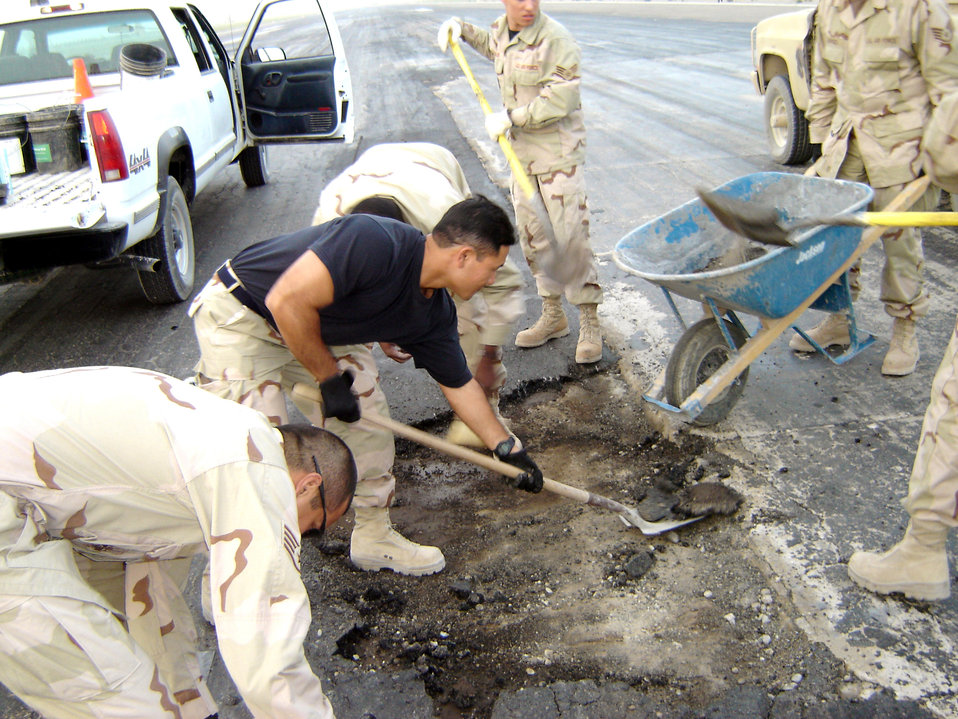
Red Horse Airmen keep Afghan supply lanes open

KANDAHAR AIRFIELD, Afghanistan -- Capt. Reid Matsuda shovels a runway spall. The 40-year-old airfield requires constant upkeep to ensure that heavy aircraft can land and resupply here. Captain Matsuda is assigned to the 451st Civil Engineer Group.